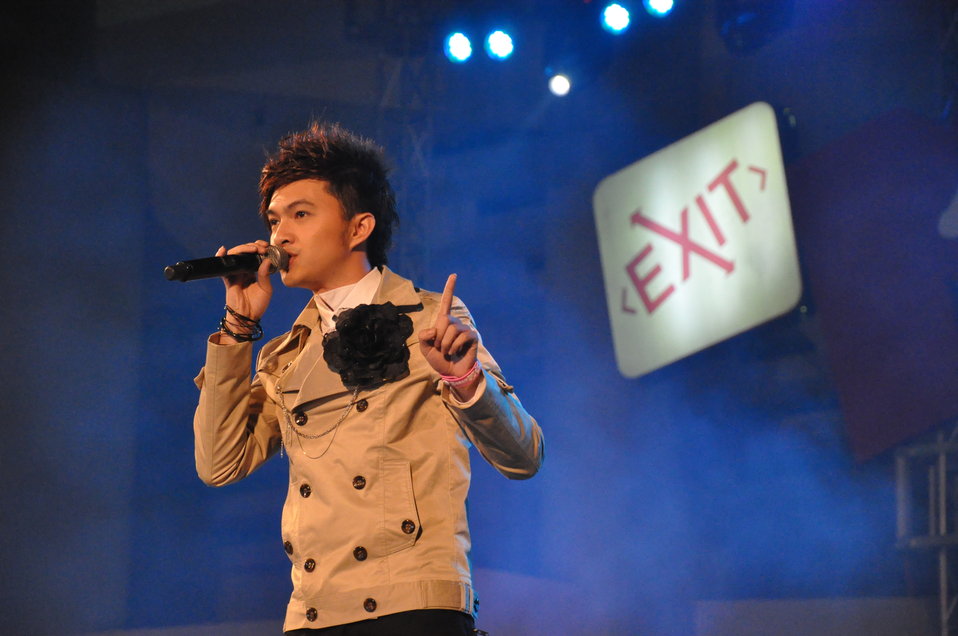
USAID and MTVEXIT concert in Can Tho

Concert in Can Tho against human trafficking, April 10, 2010